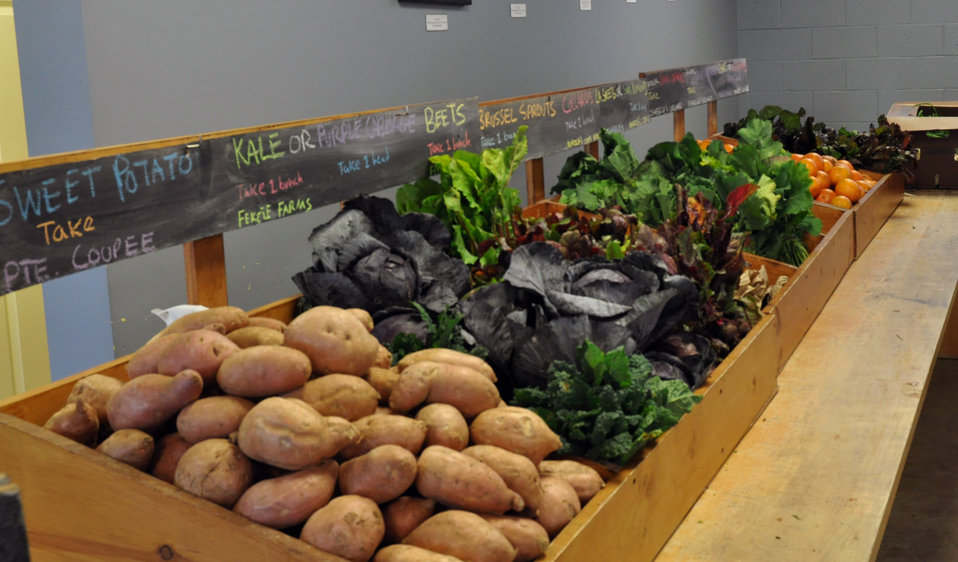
Vegetables for sale at Hollygrove Market and Farm (HGMF) in New Orleans, LA on Tuesday, Feb. 26, 2013.